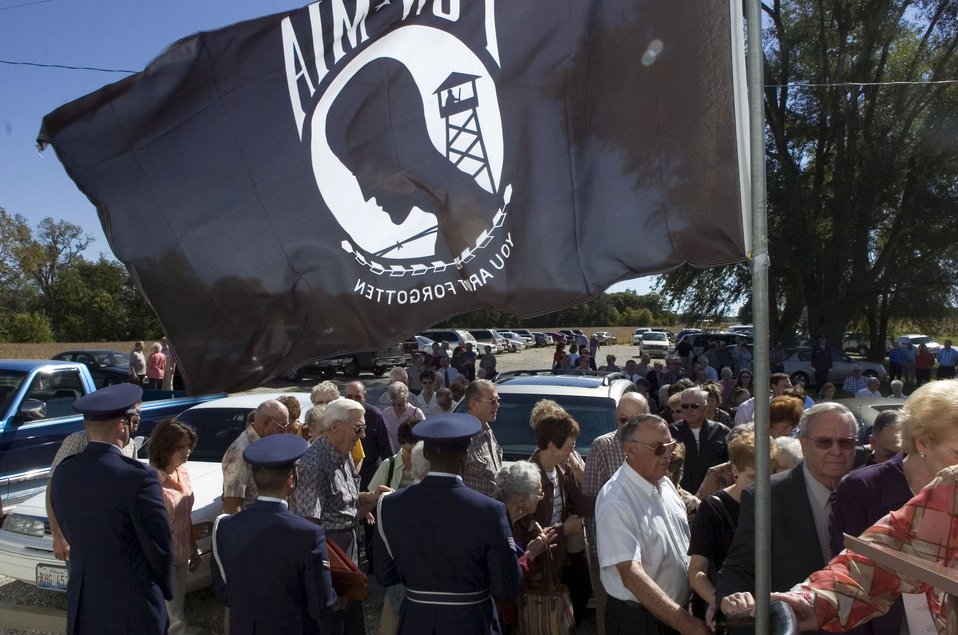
Siblings honor brother's sacrifice

Hundreds of friends and family members attend a memorial service Oct. 1 near Avon, Ill., for 1st Lt. Bruce Sweney, an Air Force pilot shot down over North Korea in 1951. The service was held at a rural church near Avon, where Lieutenant Sweney grew up before entering the Air Force. He is one of 389 still listed as missing in action from the Korean War.